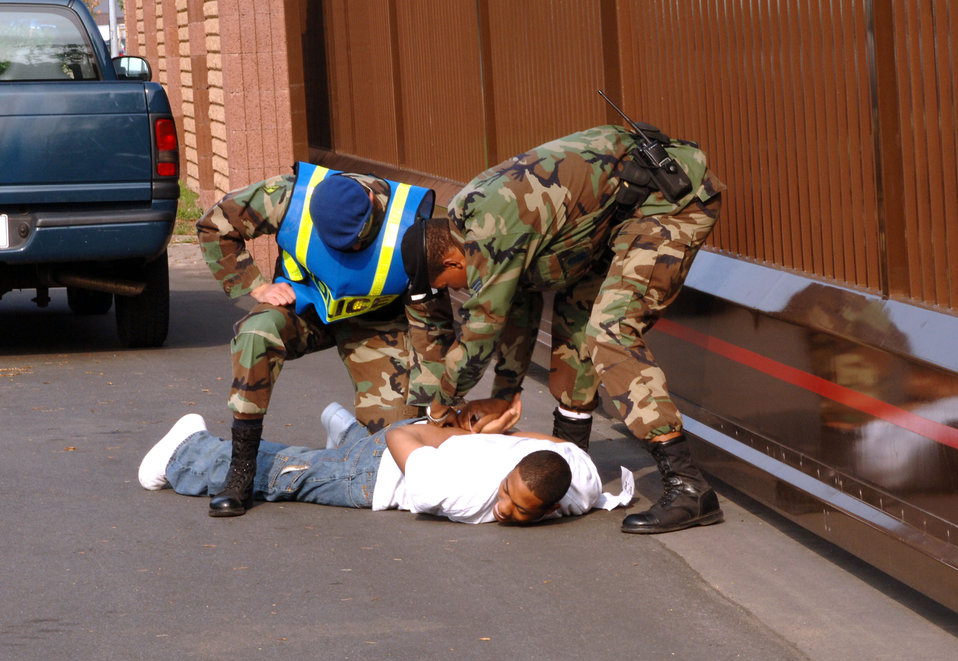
Confrontation management exercise

Airman Lamond Waller is cuffed on the ground by German Guard Sosha Dittert and Senior Airman Xavier Drake during a confrontation managment exercise at Vogelweh Air Station, Germany, on Aug. 4. The Airmen are with the 569th U.S. Forces Police Squadron.